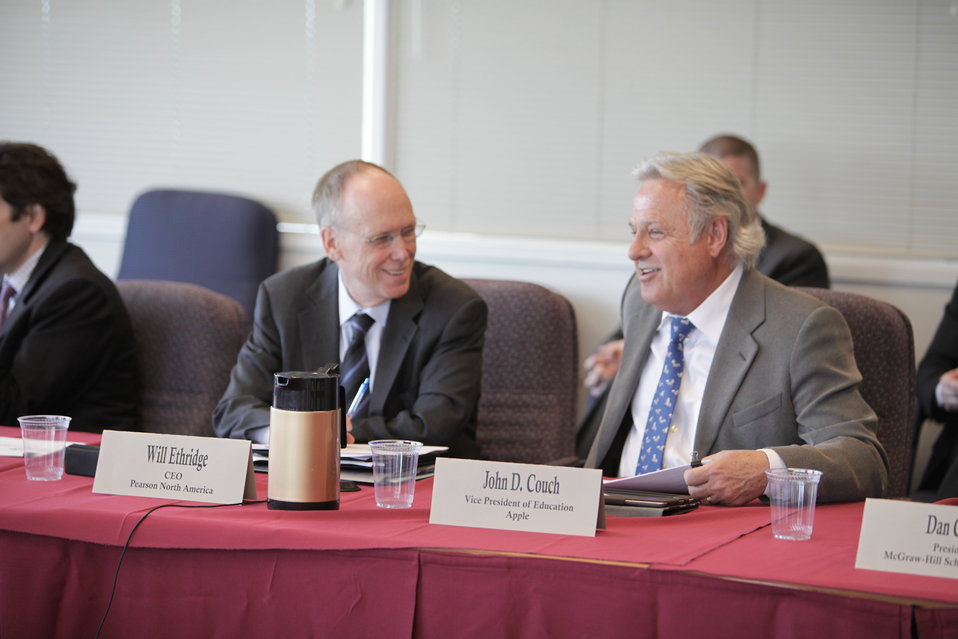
FCC Chairman Host Leaders From the Digital Education Ecosystem

CEO of Pearson North America, Will Ethridge and VP of Educations at Apple, John D. Couch attends FCC Chairman's event at FCC's HQ in Washington, DC on March 29, 2012.